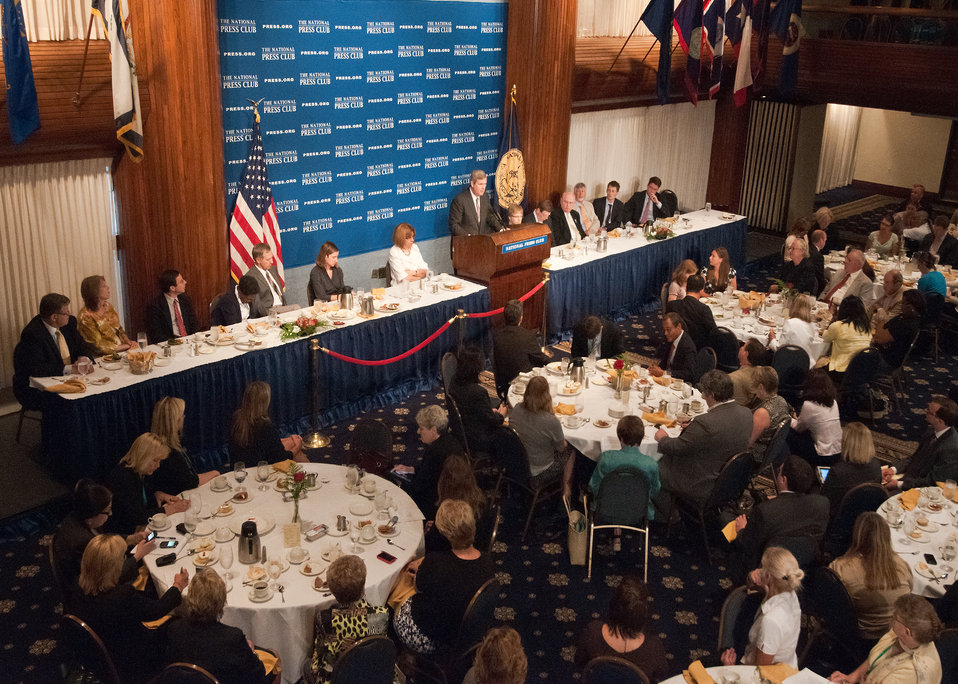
Agriculture Secretary Tom Vilsack spoke to journalists and national agriculture leaders about Innovation in American Agriculture, Sustainable Solutions to Help Feed the World at the National Press Club in Washington, DC, Monday, June 13, 2011 prior to attending the G20 Summit in France with global agriculture leaders. Secretary Vilsack mentioned in his speech, 'As we look to the future, this challenge grows even more stark. The global population is on the rise and strong economic growth in developing countries is expanding middle classes and increasing demand for agricultural products. We will have to increase food production by 70 per cent to feed a larger, richer global population of 9.3 billion by 2050. What's more, agriculture will play a role in meeting the growing demand for energy – which is expected to increase by more than 40% by 2035.”